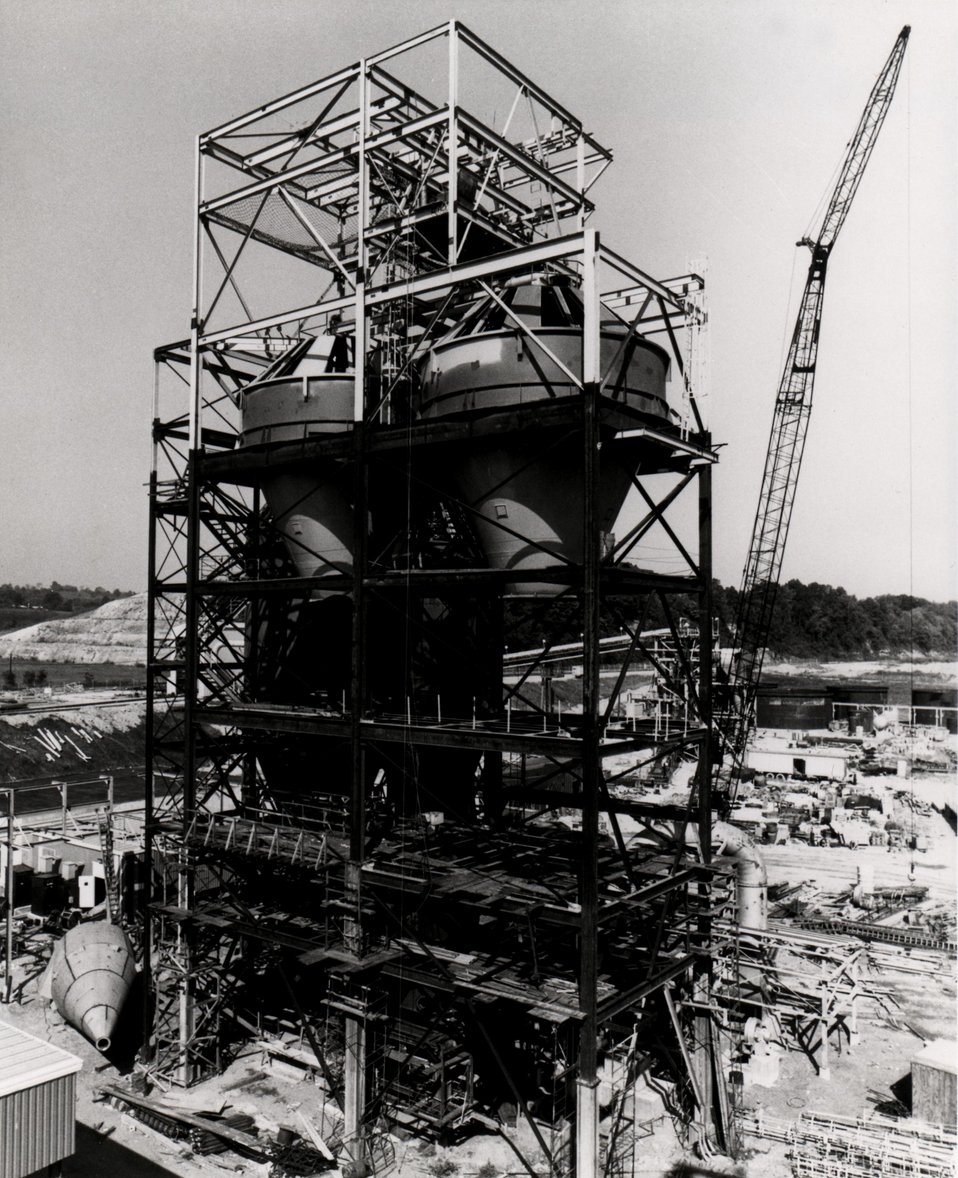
Coal Storage Preparation Area. Circa 1979.